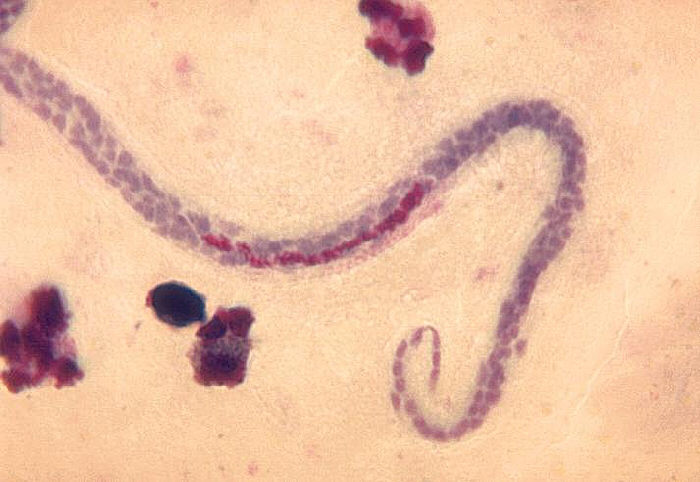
Wuchereria bancrofti microfilaria.